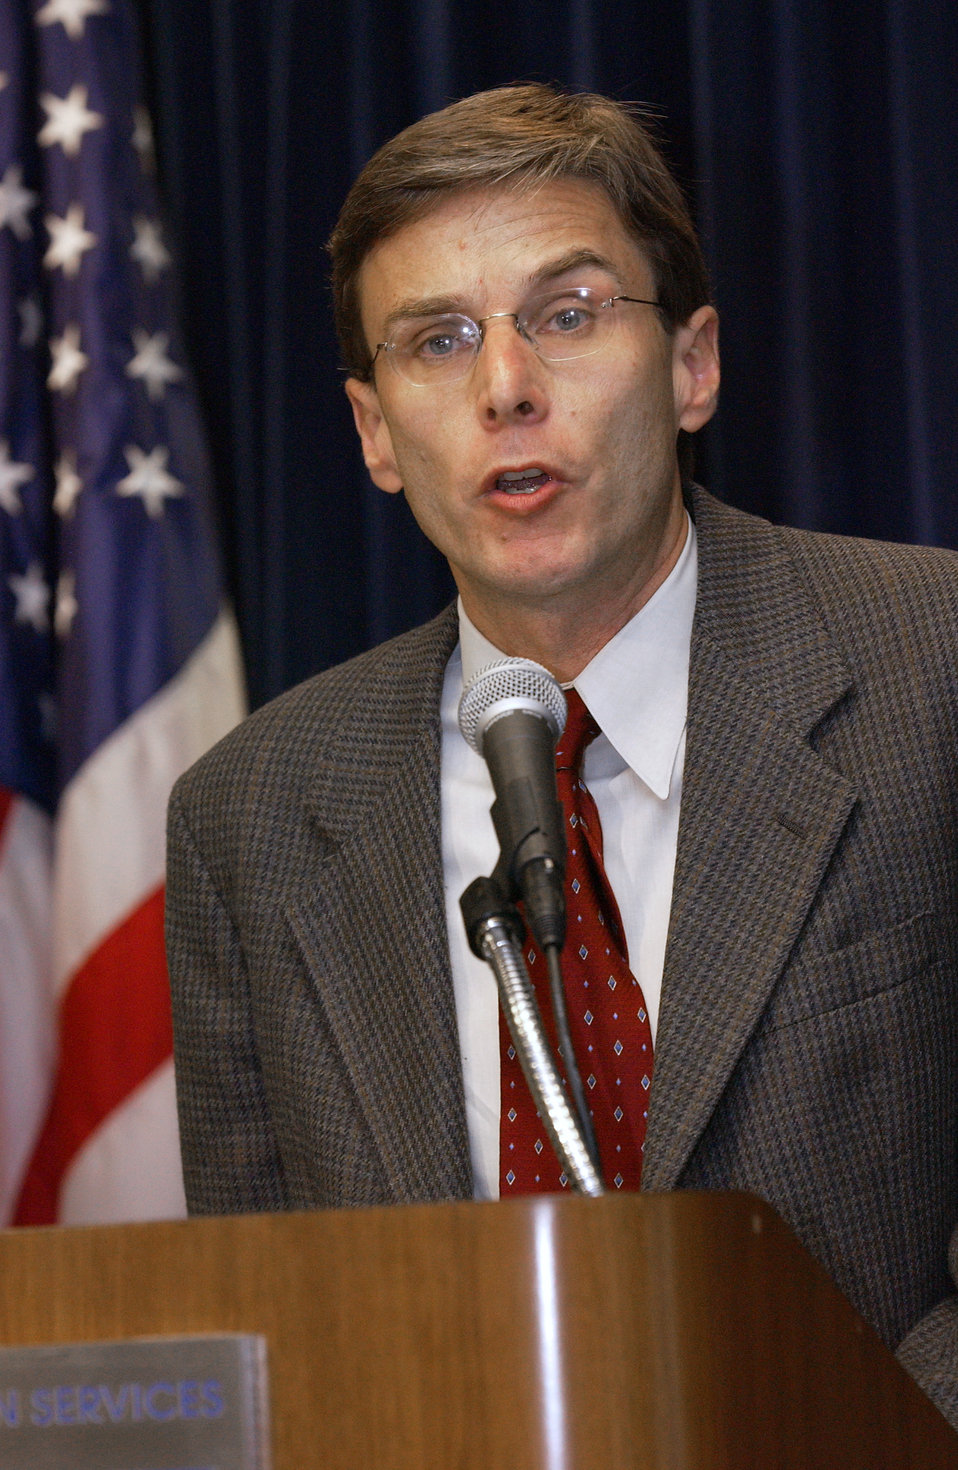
This was a Monkeypox Update press briefing presented by Dr. David Fleming, June 11, 2003.